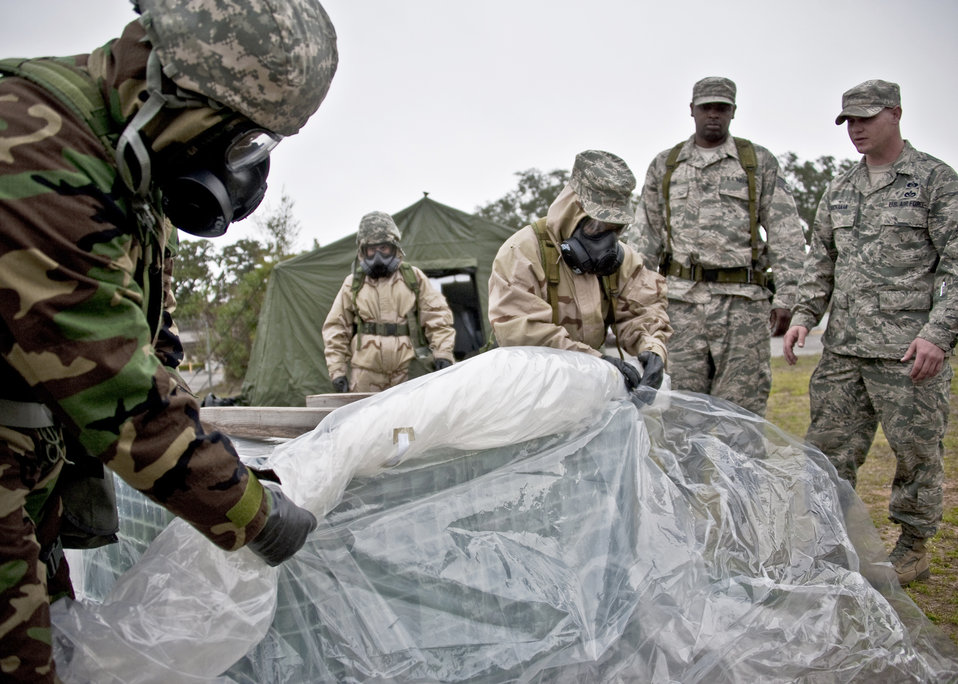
Operational readiness exercise

Airmen roll up